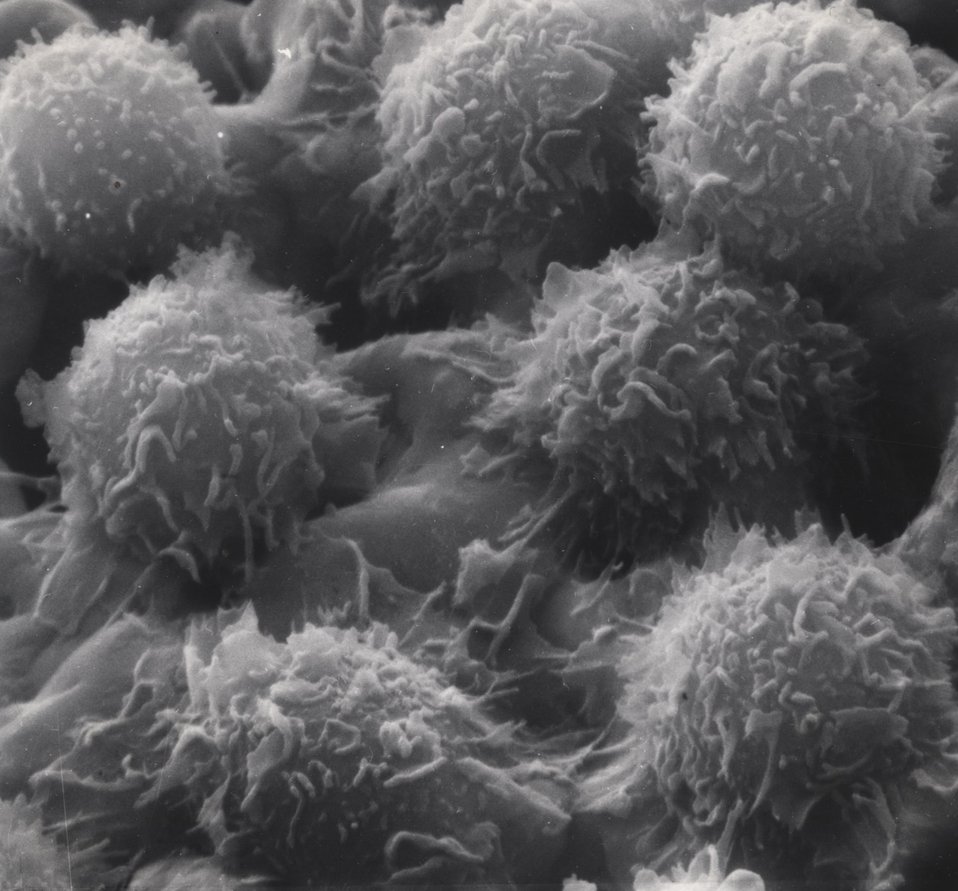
Cells from a typical case of 'hairy' cell leukemia showing the structural figures described in Fig. 1.